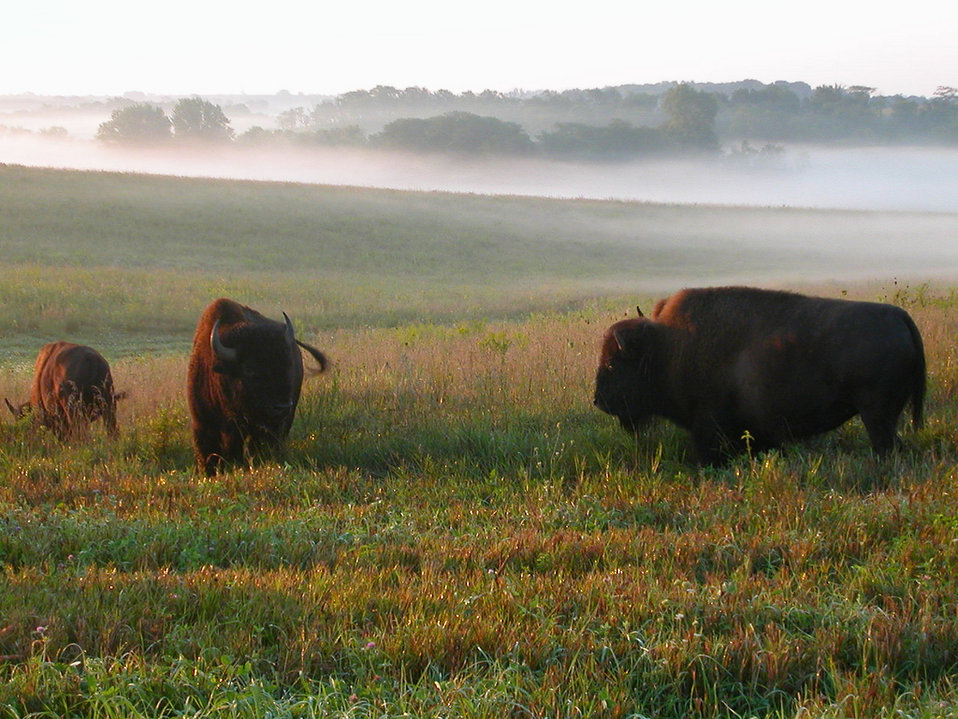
bison on the prairie

Neal Smith National Wildlife Refuge